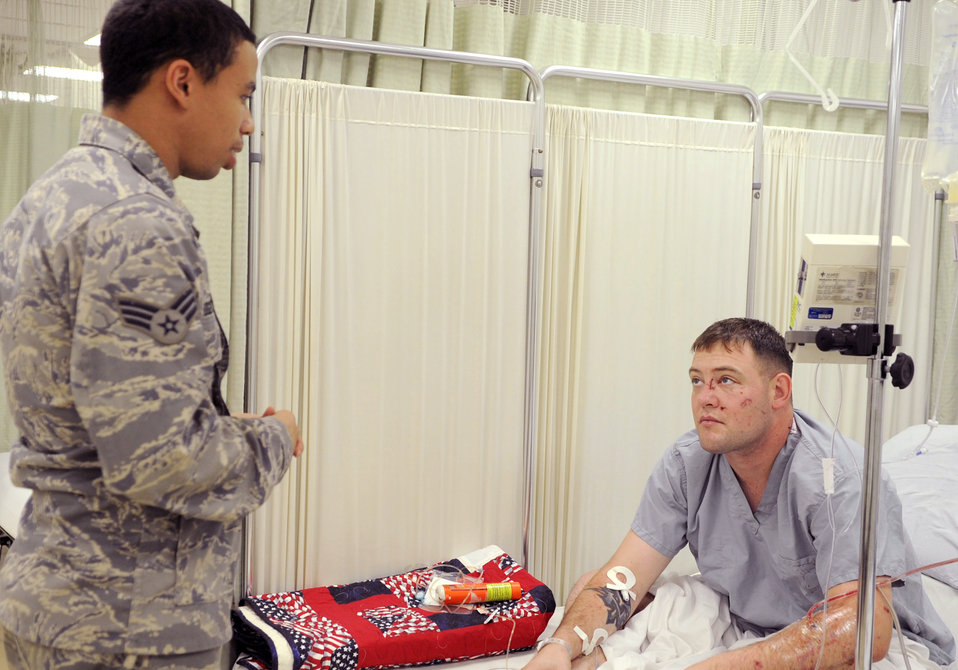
Medical Airmen integral to medal ceremony

Senior Airman Greg Rodgers (left) visits recent Purple Heart recipient Army Cpl. Paul Vanlinder Jan. 4, 2011, at Joint Base Balad, Iraq. Corporal Vanlinder was admitted to the intensive care unit here after being injured in an improvised explosive device attack near Abu Sayada, Iraq. Airman Rodgers is a 332nd Expeditionary Medical Operations Squadron medical technician. Corporal Vanlinder is assigned to Charlie Company 1-21 Infantry Battalion.